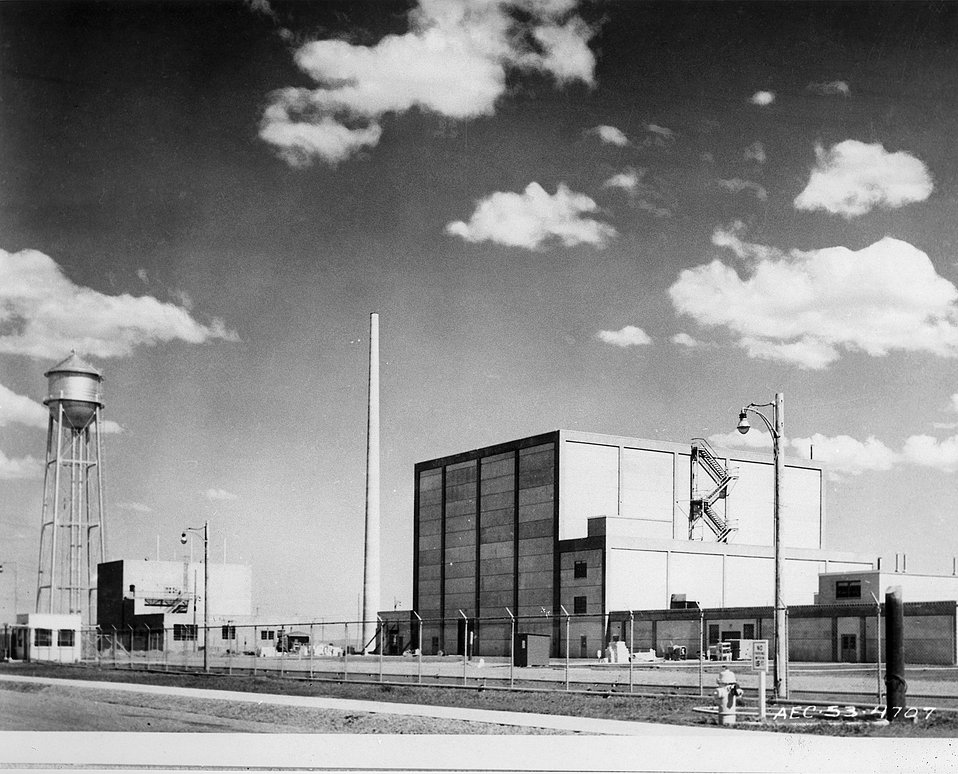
Idaho Falls, Idaho...Materials Testing Reactor Building.
c.1953